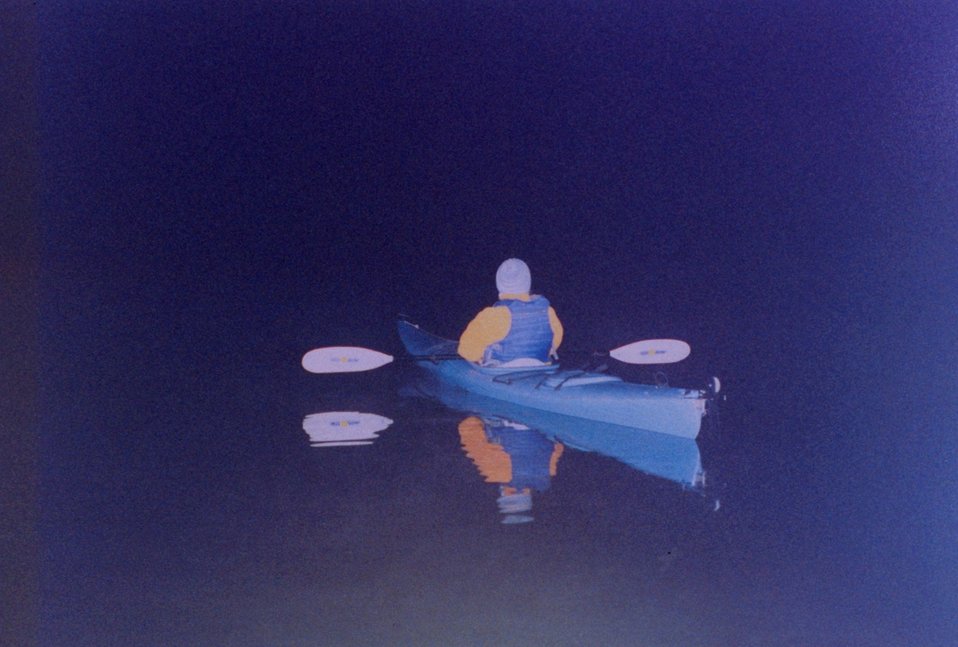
A night-time kayaker on the Patuxent River.